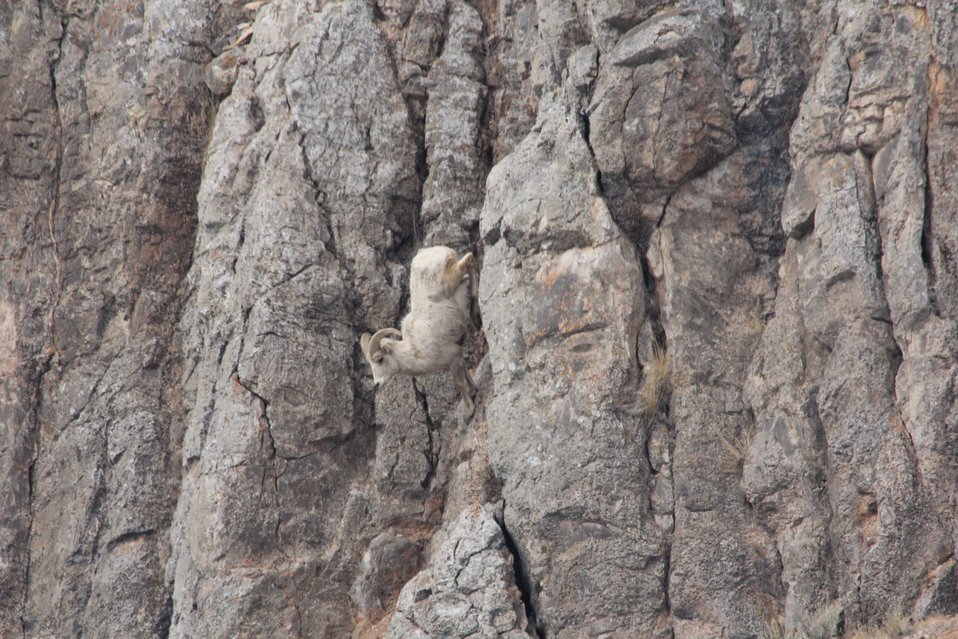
Agility on the Rocks

Another example of a bighorn sheep's amazing agility . . .

Credit: USFWS / Ann Hough, National Elk Refuge volunteer